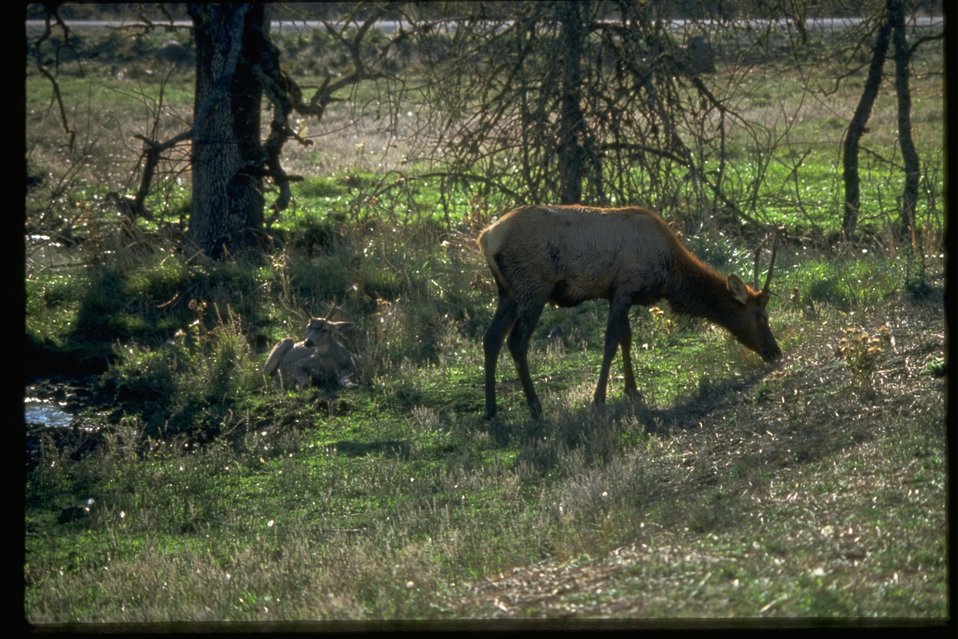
An elk eating grass next to a small creek.